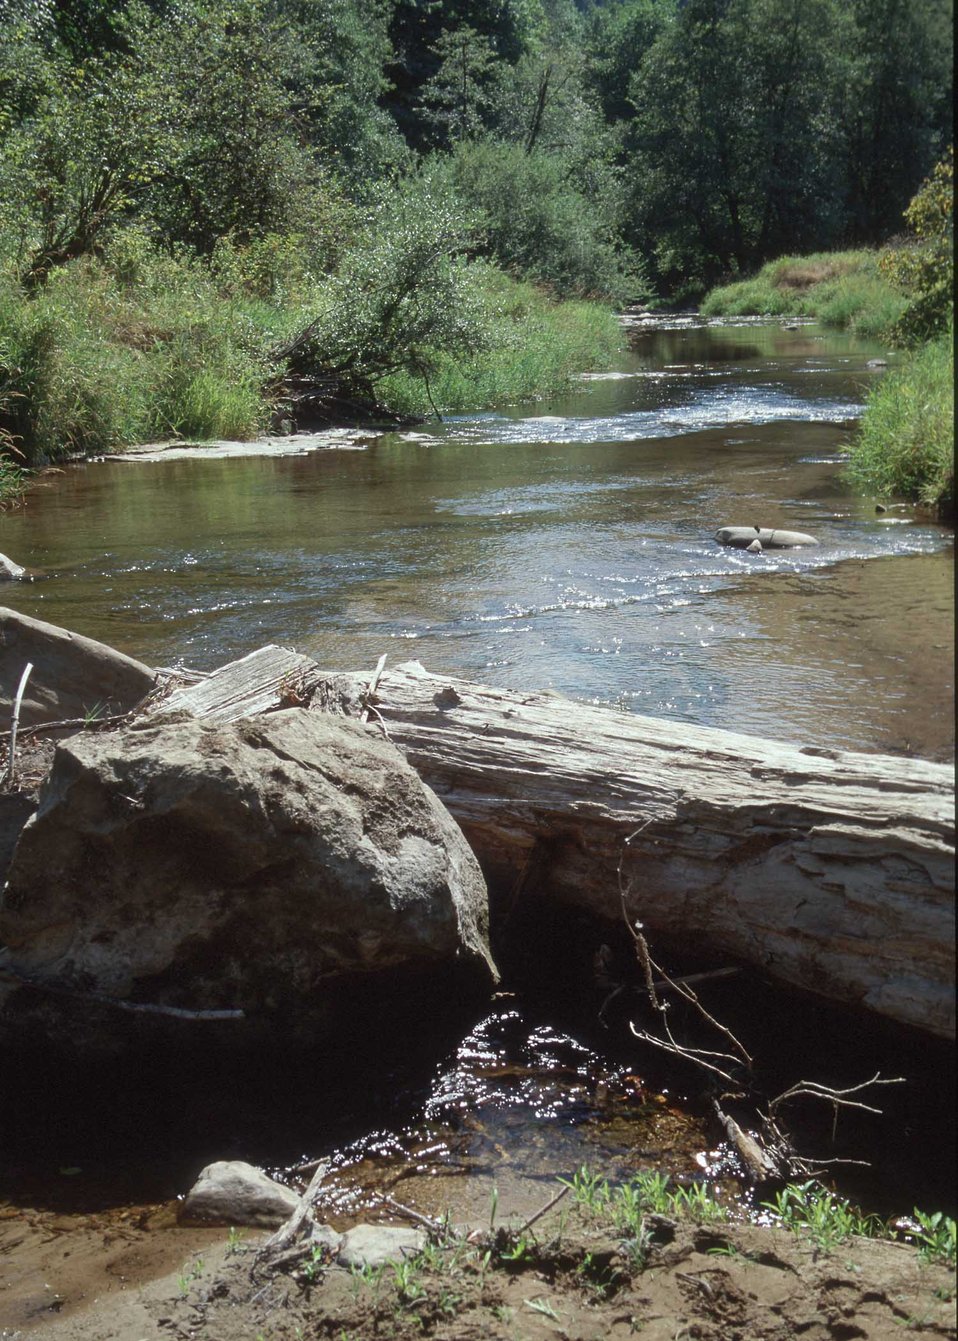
Log structures in stream to catch sediment and rebuild salmon habitat.